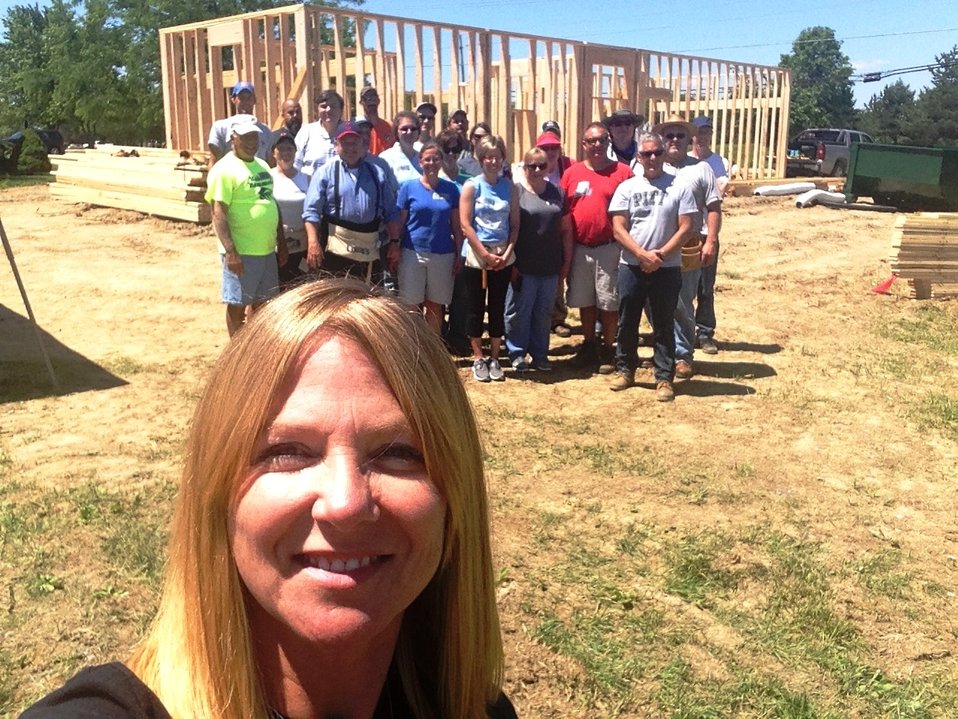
140606 Ohio Habitat Michelle Amrine selfie RD staff builders 2

Soon-to-be homeowner Michelle Amrine snaps a 'selfie' with U.S. Department of Agriculture (USDA) Rural Development (RD) Ohio State employees who spent the day working on Amrine's Habitat for Humanity site in Marysville, OH (Union County). The house marks the first-ever built-from-the-ground-up collaboration between Habitat and USDA RD in Ohio.